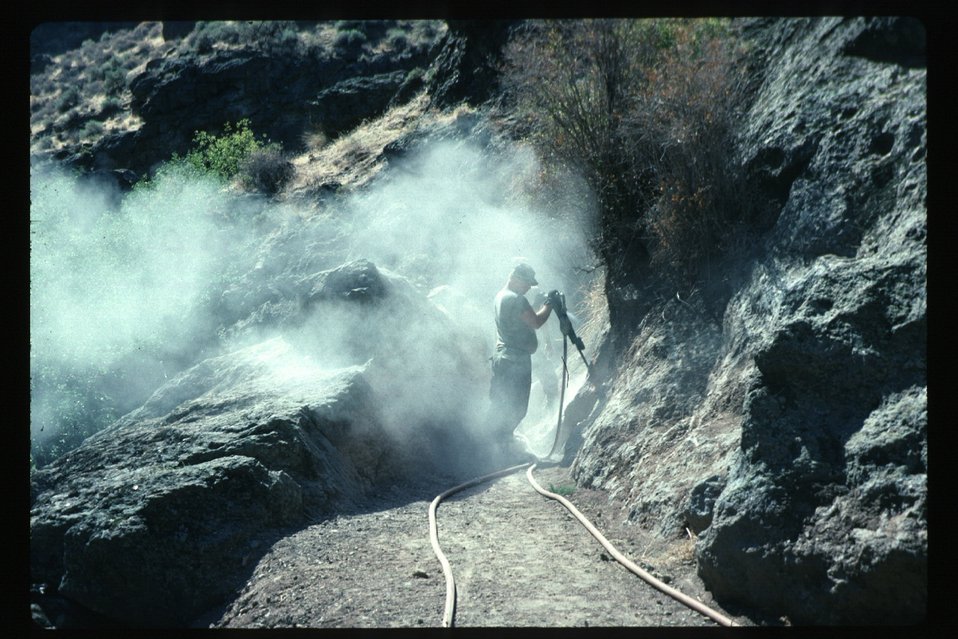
Recreation National Guard blasting trail Jump Creek Falls LSRD Lower Snake River District